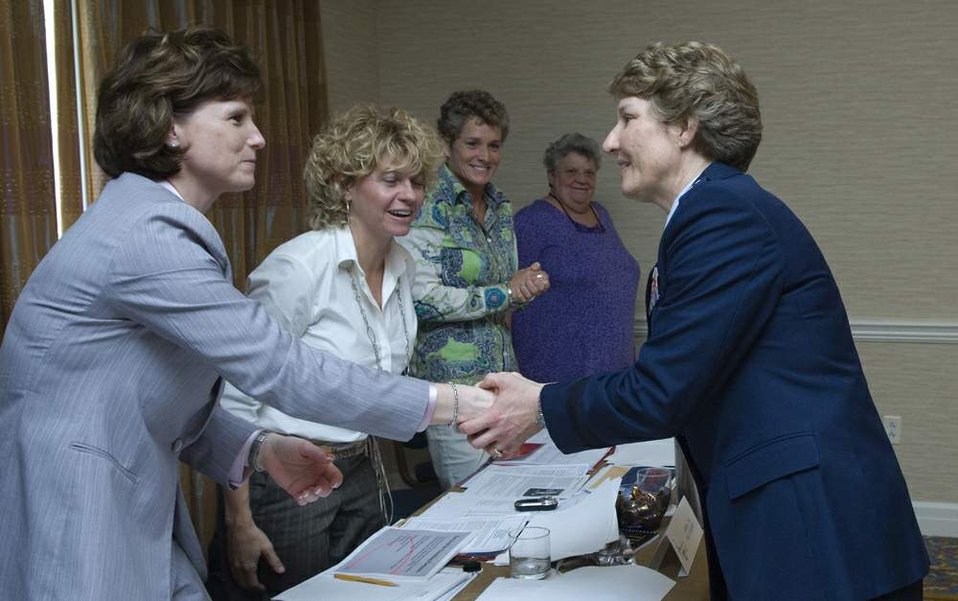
General participates in NCAA Women's Final Four

Brig. Gen. Michele D. Johnson greets members of the NCAA Women's Basketball Coaches Association Board of Directors meeting April 4 in Tampa, Fla. General Johnson is the most decorated female athlete in U.S. Air Force Academy history. She was selected by the NCAA to speak to women athletes and participate at numerous NCAA events before the 2008 NCAA Women's Final Four basketball tournament. General Johnson is the deputy director on the war on terrorism, Strategic Plans and Policy Directorate on the Joint Staff at the Pentagon.